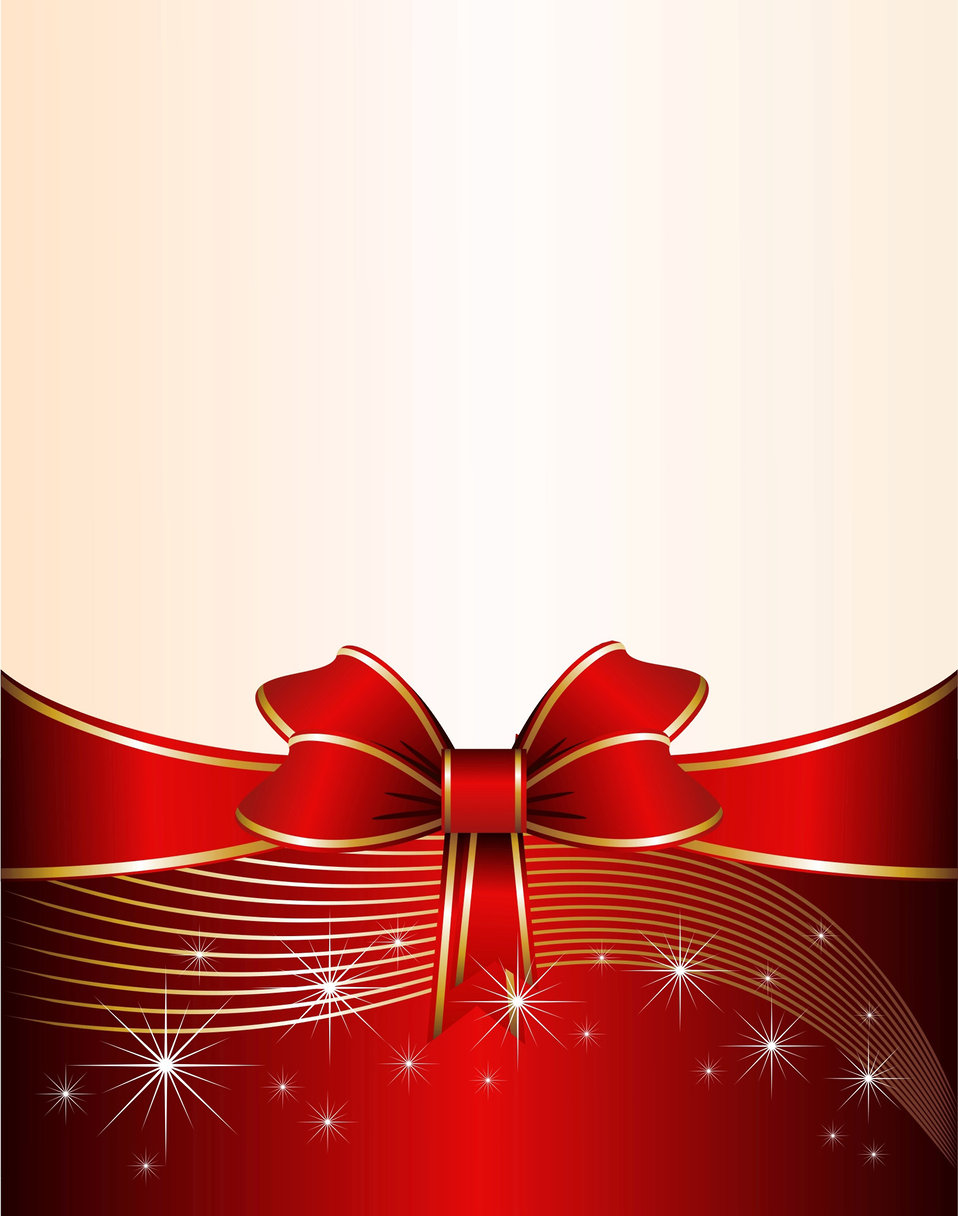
Festive background

Elegant background with red ribbon and bow.